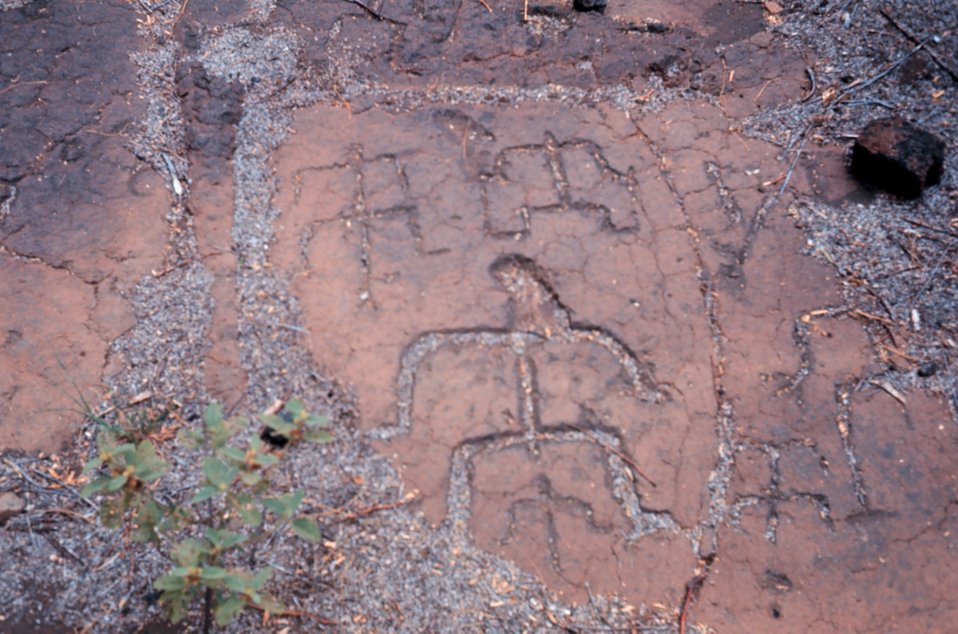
Petroglyphs